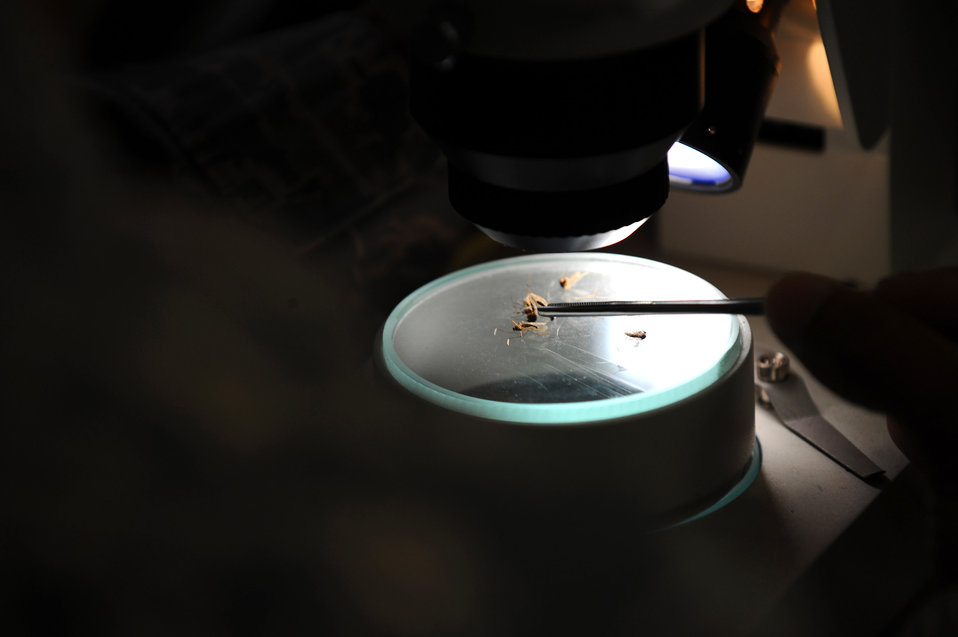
Eielson NCO bugs mosquitos

Tech. Sgt. Christopher Beach identifies the species of mosquitoes under a microscope Aug. 14. Sergeant Beach has 20 strategically-placed mosquito magnets around the base to capture, identify, count and send mosquitoes to be tested for diseases. Last year, he caught more than 3 million mosquitoes. He is assigned to the 354th Civil Engineer Squadron entomology shop.